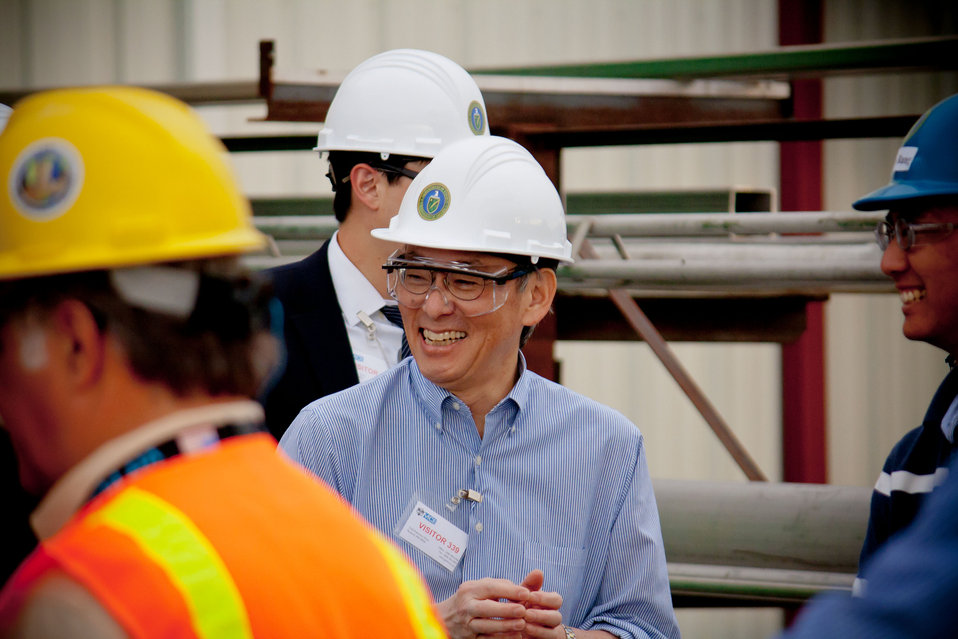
Secretary Steven Chu visits Hanford's Large Scale Integrated Test Facility.